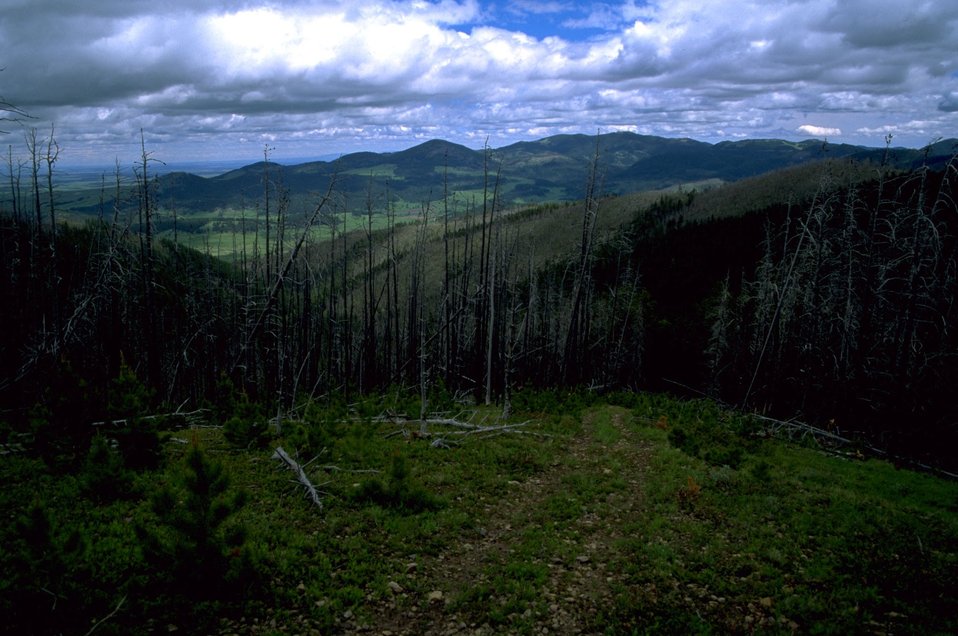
Dead trees in the Judith Mountains